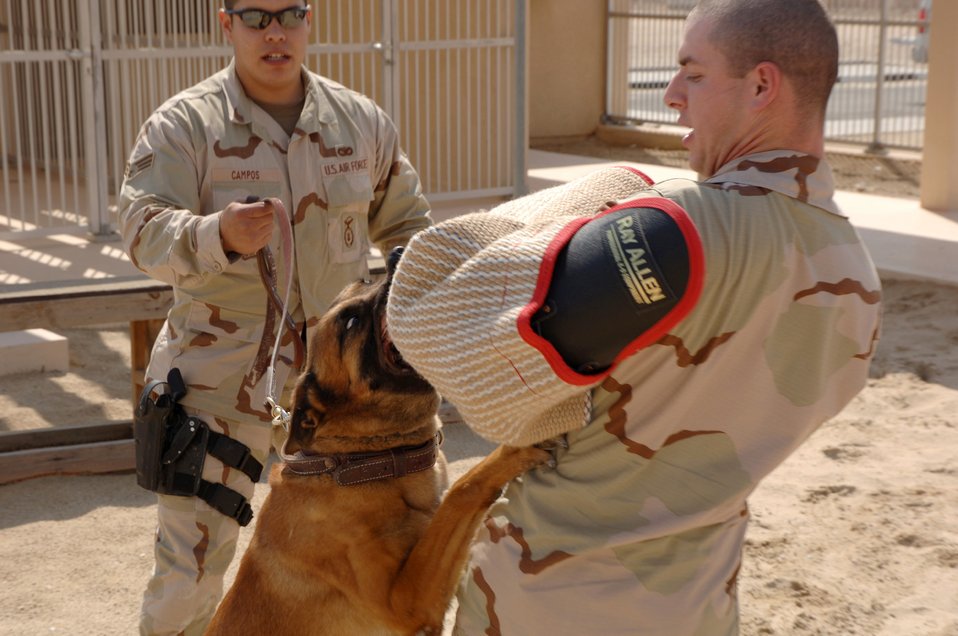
Partners in the desert

SOUTHWEST ASIA (AFPN) -- Senior Airman Martin Campos (back) conducts aggression training with his military working dog, Rico, and Senior Airman Brooks Sevin at a deployed location Feb. 24. Both Airmen and Rico are with the 379th Expeditionary Security Forces Squadron.